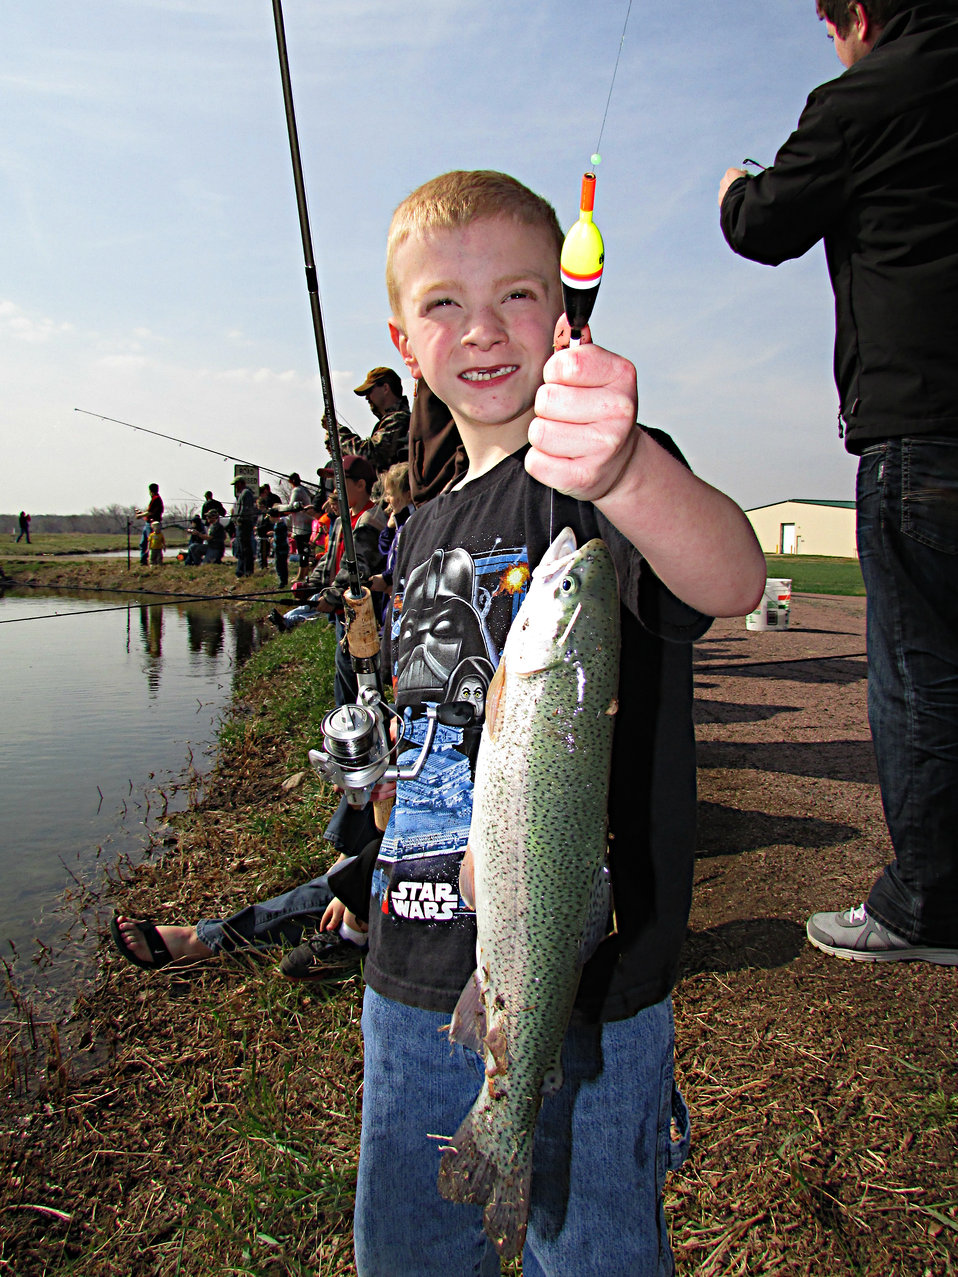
A Keeper

This was one of the first catches of the day.